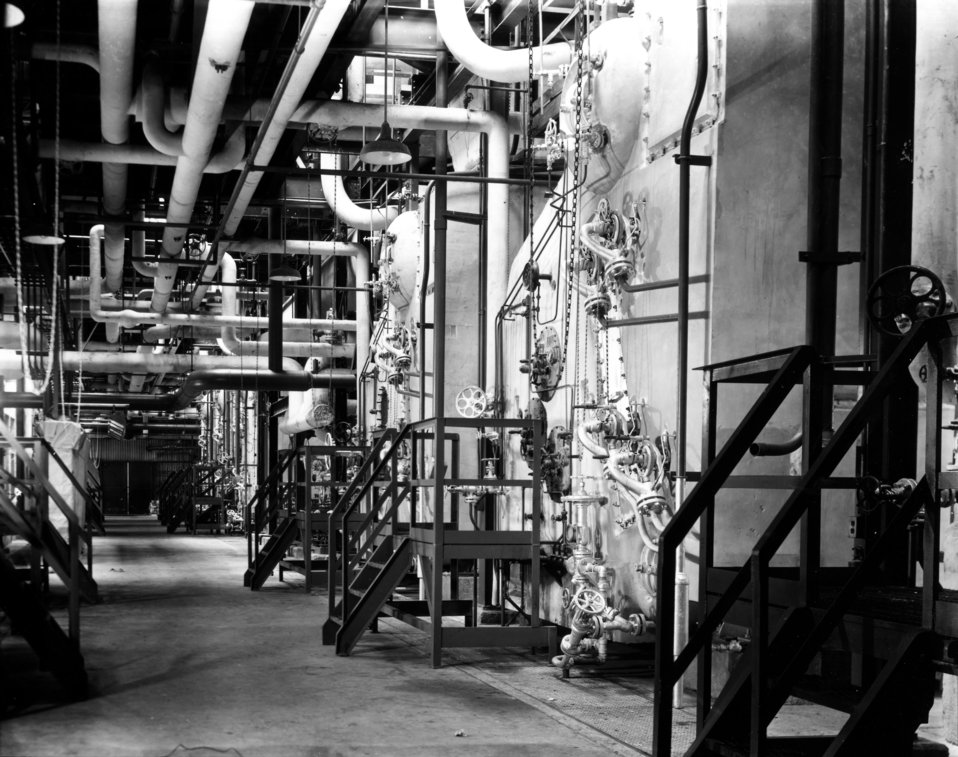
Schools at Oak Ridge